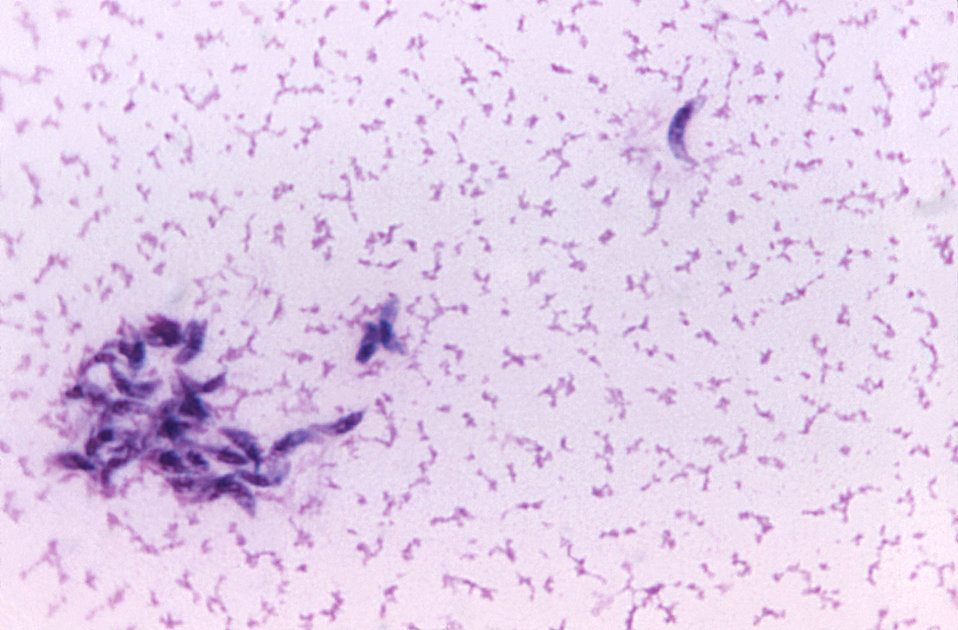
Toxoplasma gondii in mouse ascitic fluid. Smear. Parasite.